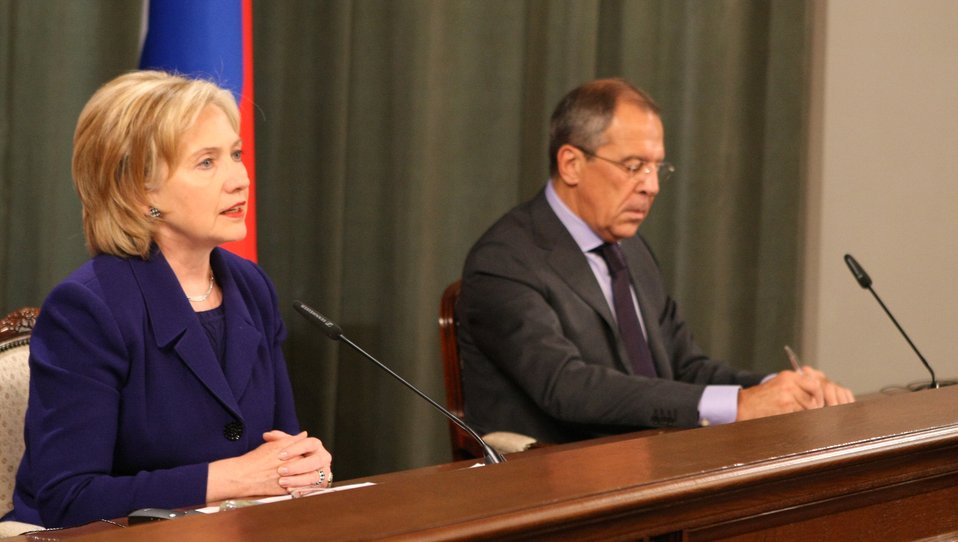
Secretary Clinton With Russian Foreign Minister Lavrov

U.S. Secretary of State Hillary Rodham Clinton and Foreign Minister Lavrov respond to questions at a press conference after a Bilateral Meeting in Moscow, Russia October 13, 2009.